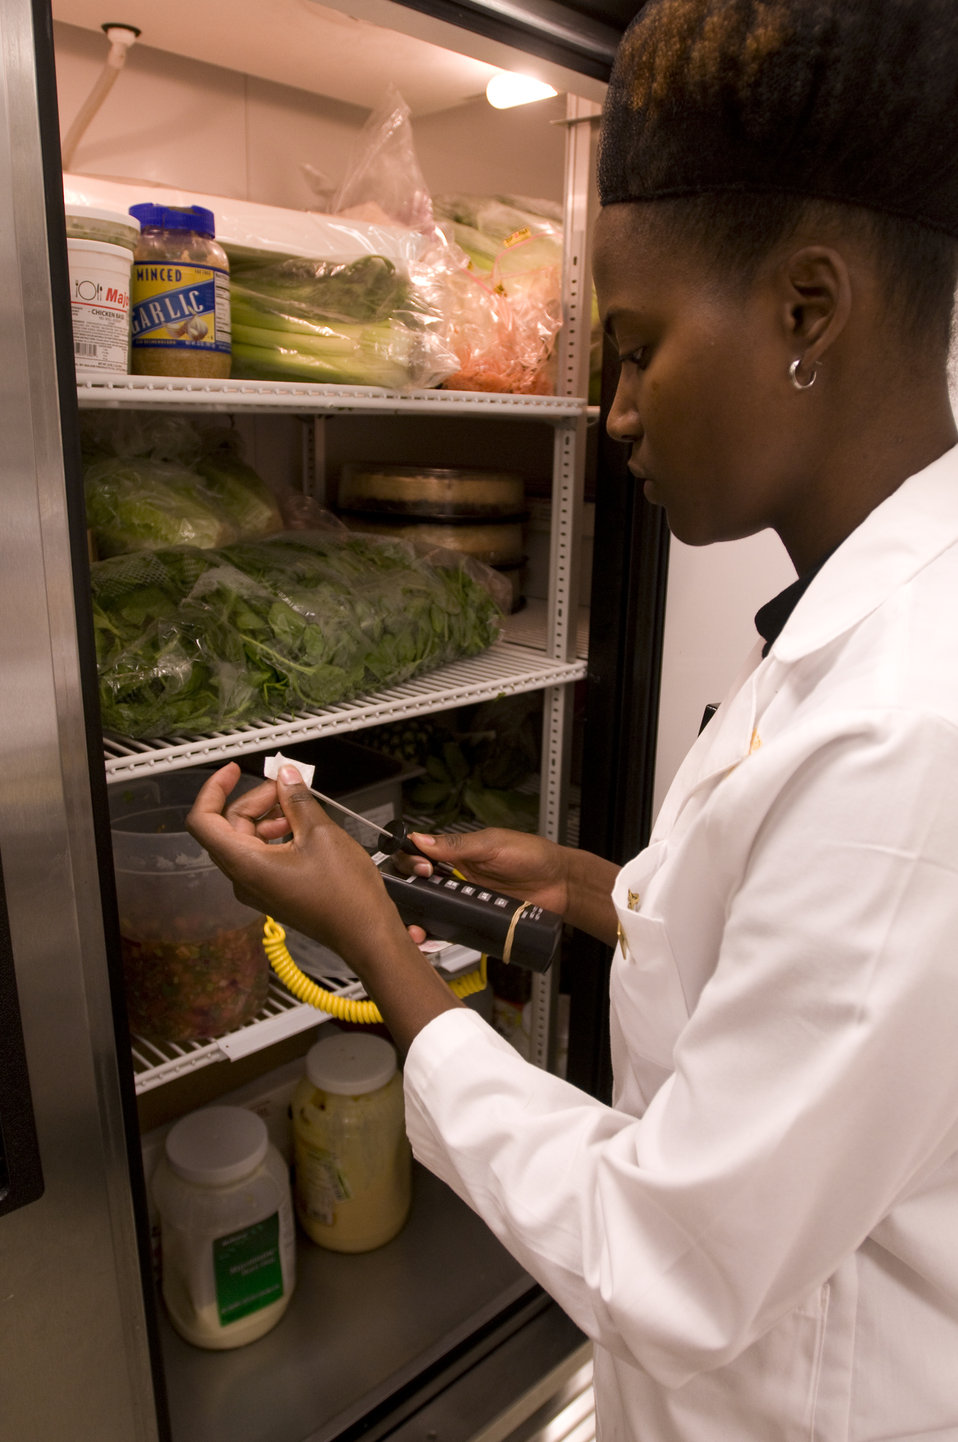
The state-appointed health inspector pictured here, was in the process of performing an assessment of this kitchen's sanitary condition. At this point in her inspection, she was taking thermal readings of contents within a refrigerator, using an electronic thermometer. She can be seen here wiping clean the thermometer's metallic probe after having taken a temperature reading of one of the refrigerated foods, and before inserting it into another of the refrigerator's contents.